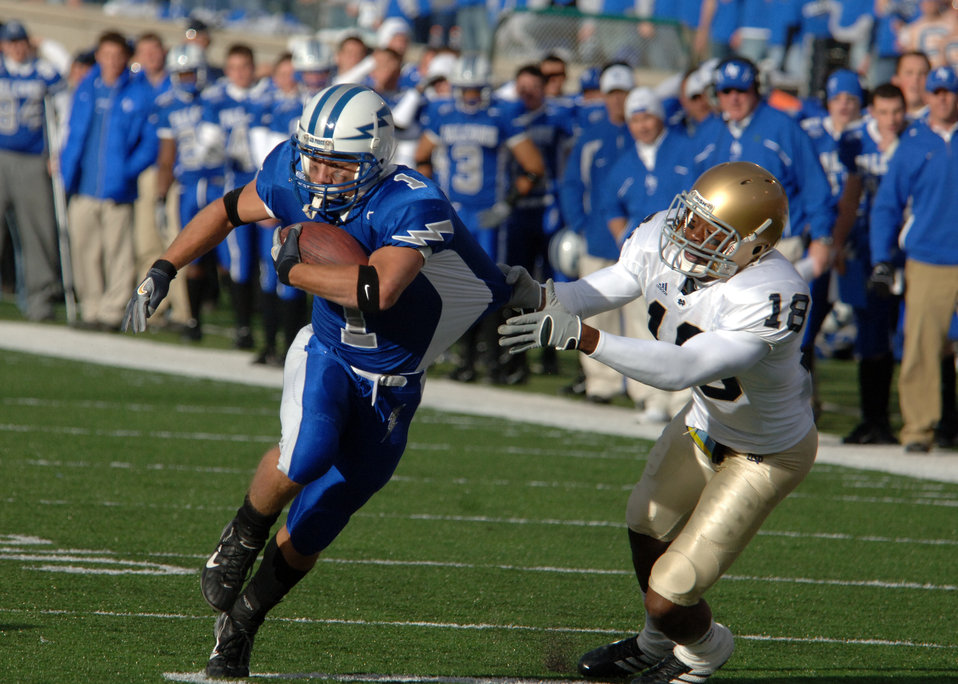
A Near Escape

Air Force halfback Chad Hall nearly escapes the grasp of Notre Dame defensive back Chinedum Ndukwe Saturday. Hall let the Falcons in rushing with 72 yards, but the explosive Irish offense proved too much for Air Force. Notre Dame won, 39-17.